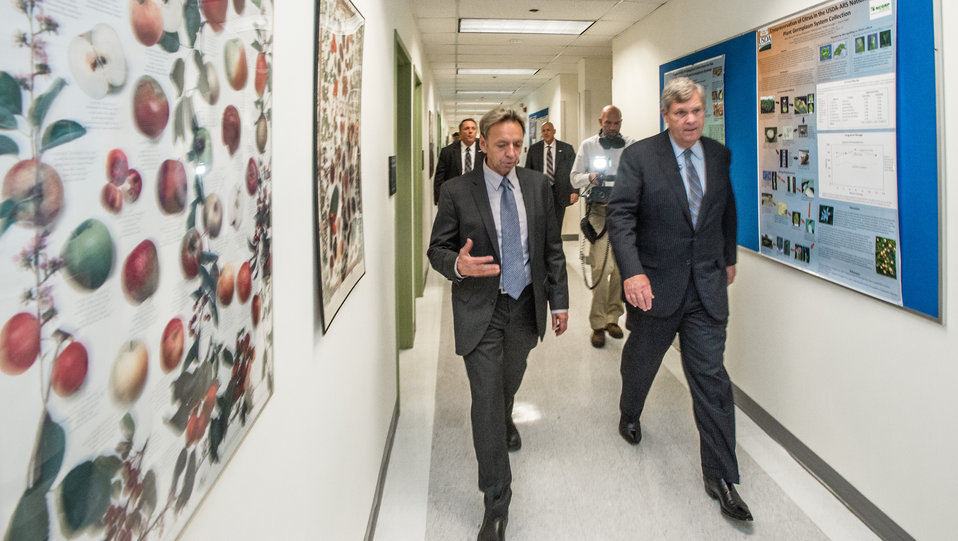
Agriculture (USDA) Secretary Tom Vilsack , right and Agriculture Research Service (ARS), National Center for Genetic Resources Preservation (NCGRP), Research Leader Geneticist Dr. David Dierig, walk through the plant research section, in Ft. Collins, CO, on Wednesday, Nov. 6, 2013.